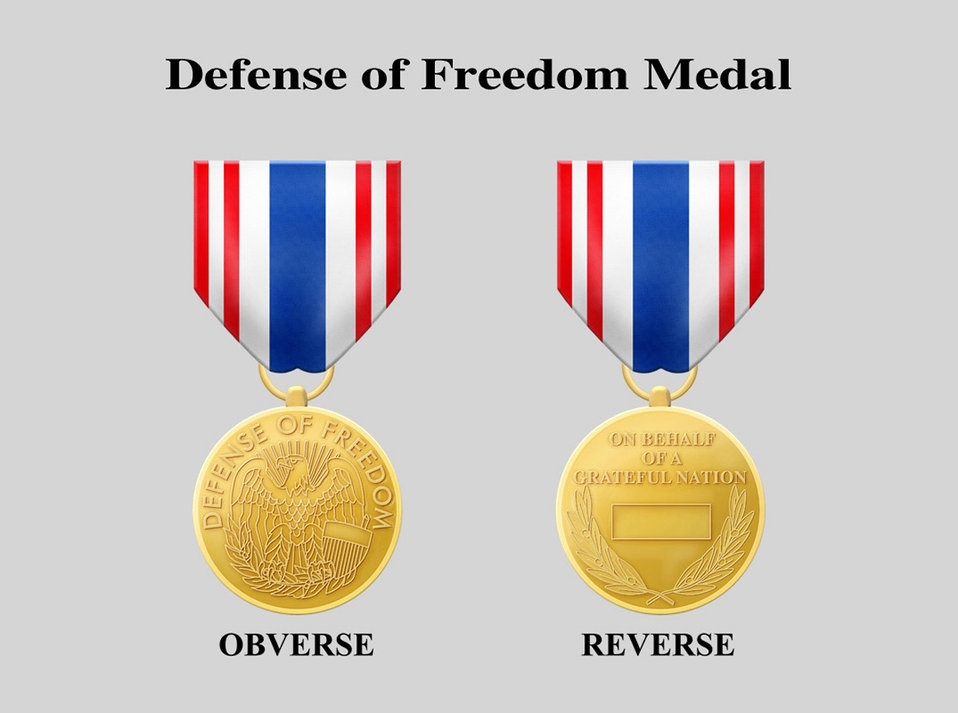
911 Medals

WASHINGTON -- About 90 Department of Defense civilian employees affected by terrorists attacks Sept. 11 qualify for the new Defense of Freedom Medal.